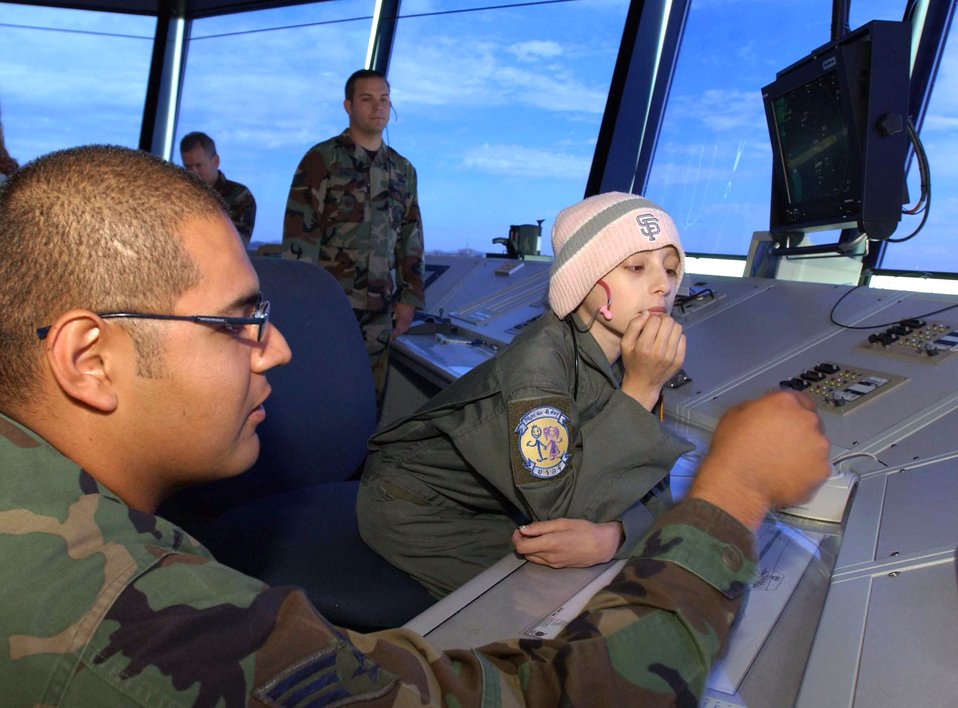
10-year-old girl spends day as KC-10 pilot

Ten-year-old Katie Powell visits the air traffic control tower at Travis Air Force Base, Calif., as part of the Pilot for a Day program on Friday, May 19, 2006. The program provides wish-fulfillment opportunities to local children with life-threatening diseases. Katie is fighting Ewing’s Sarcoma, a rare bone cancer. She is the daughter of Senior Master Sgt. Chris Powell, 60th Operations Group.